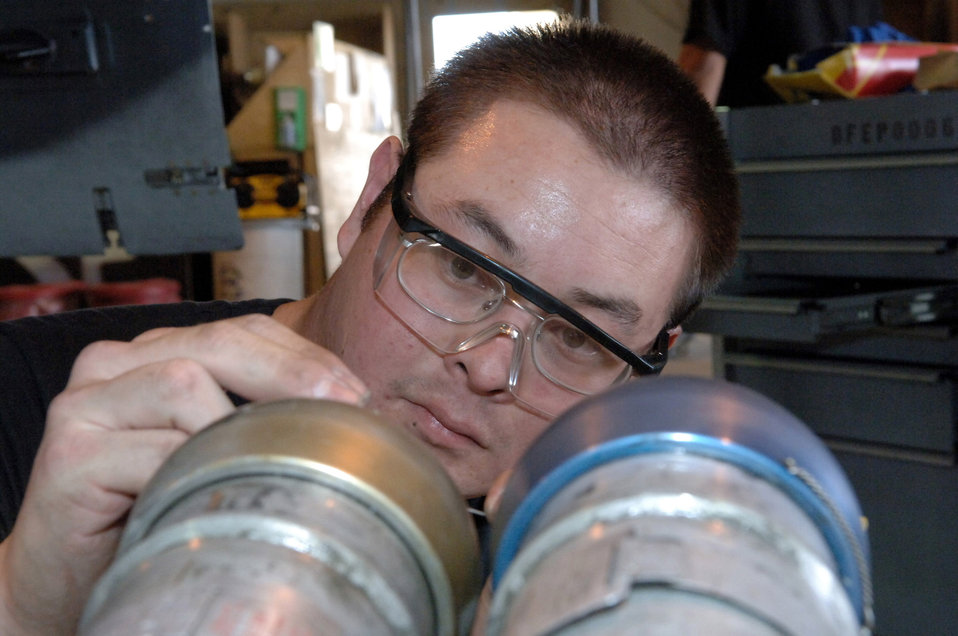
Operation Enduring Freedom

BAGRAM AIR BASE, Afghanistan -- Airman 1st Class John Kern connects a safety wire to a component of an A-10 Thuderbolt II's emergency landing gear system during a recent phase inspection here. A-10s are inspected every 400 flying hours. Airman Kern is a phase inspection technician with the 455th Expeditionary Aircraft Maintenance Squadron and is deployed from Davis-Monthan Air Force Base, Ariz.